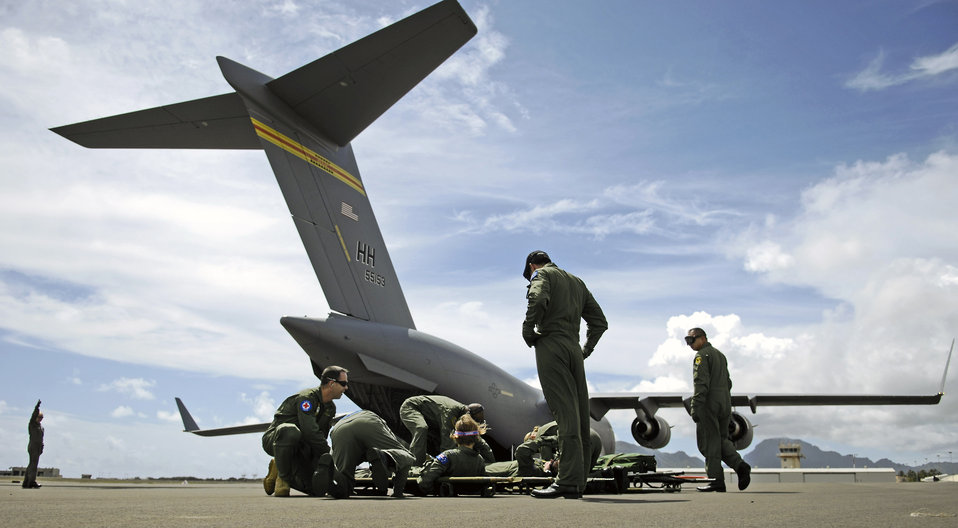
Australians train to save lives on C-17

Air Force instructors observe as Royal Australian Air Force medical personnel prepare to load patients on to a C-17 Globemaster III Oct. 16 during aeromedical evacuation operations training at Kona International Airport, Hawaii. Airmen from the 18th Aeromedical Squadron from Kadena Air Base, Japan, are there to train RAAF medical personnel who will be using specialized equipment and the C-17 for aeromedical evacuation.